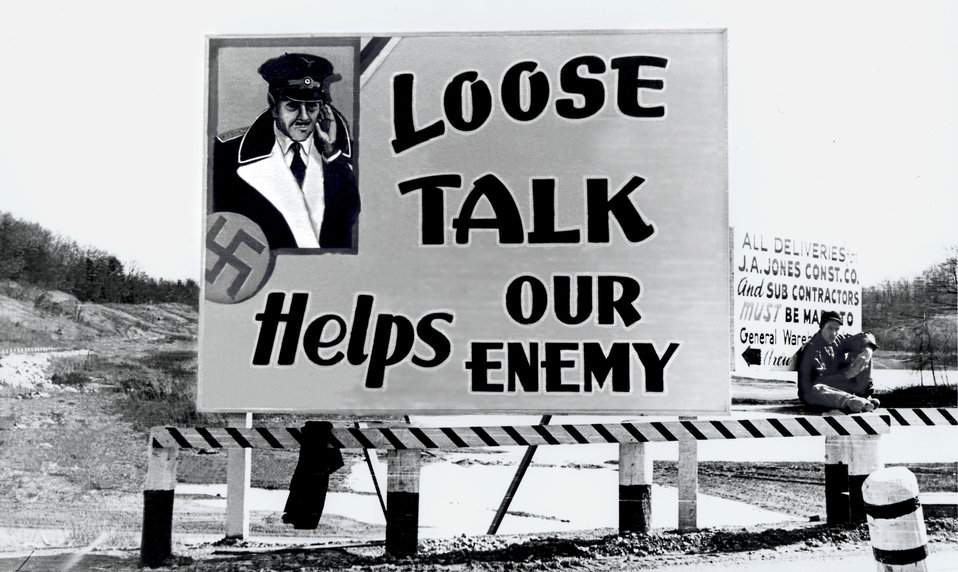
Billboard Oak Ridge During World War II

roll 196-2 DOE photo by Ed Westcott

Billboard Oak Ridge Tennessee 1940s